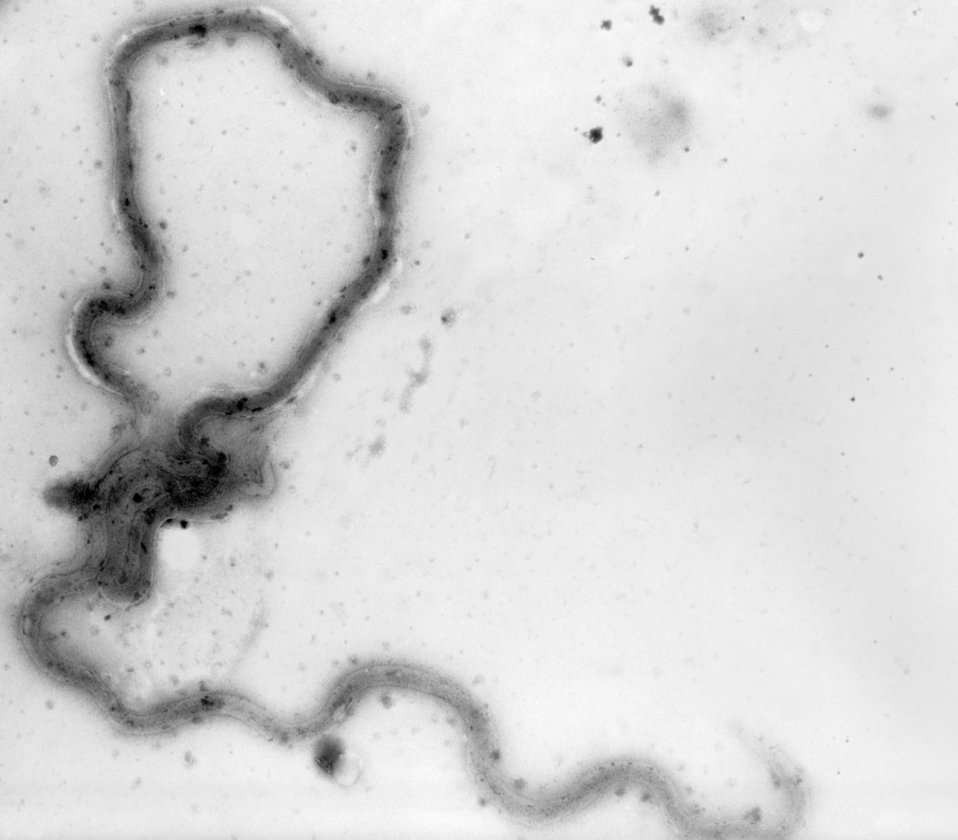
A photomicrograph of a Treponema pallidum bacterium.